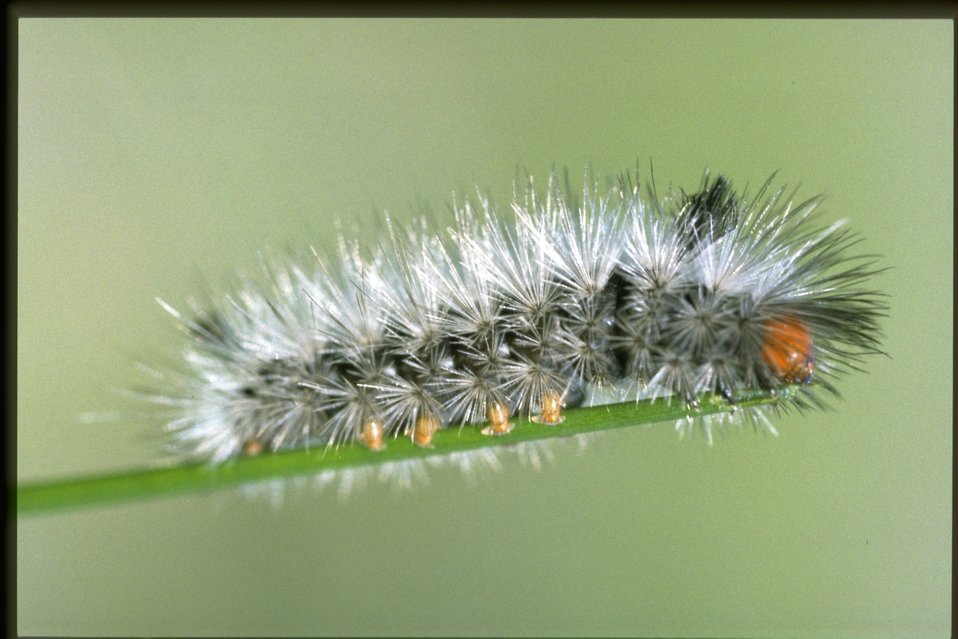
Closeup shot of Caterpillar.